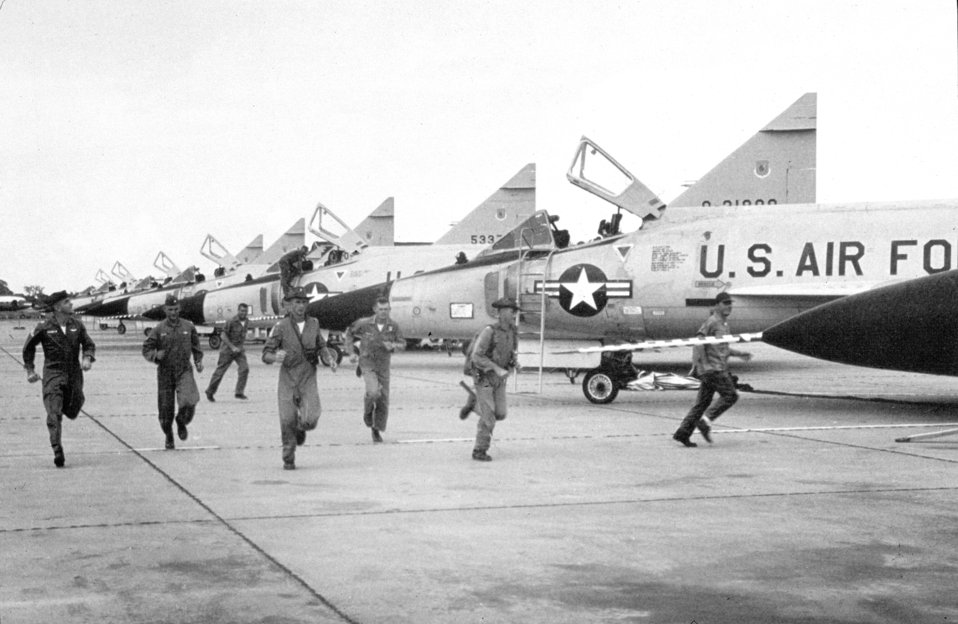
F-102s